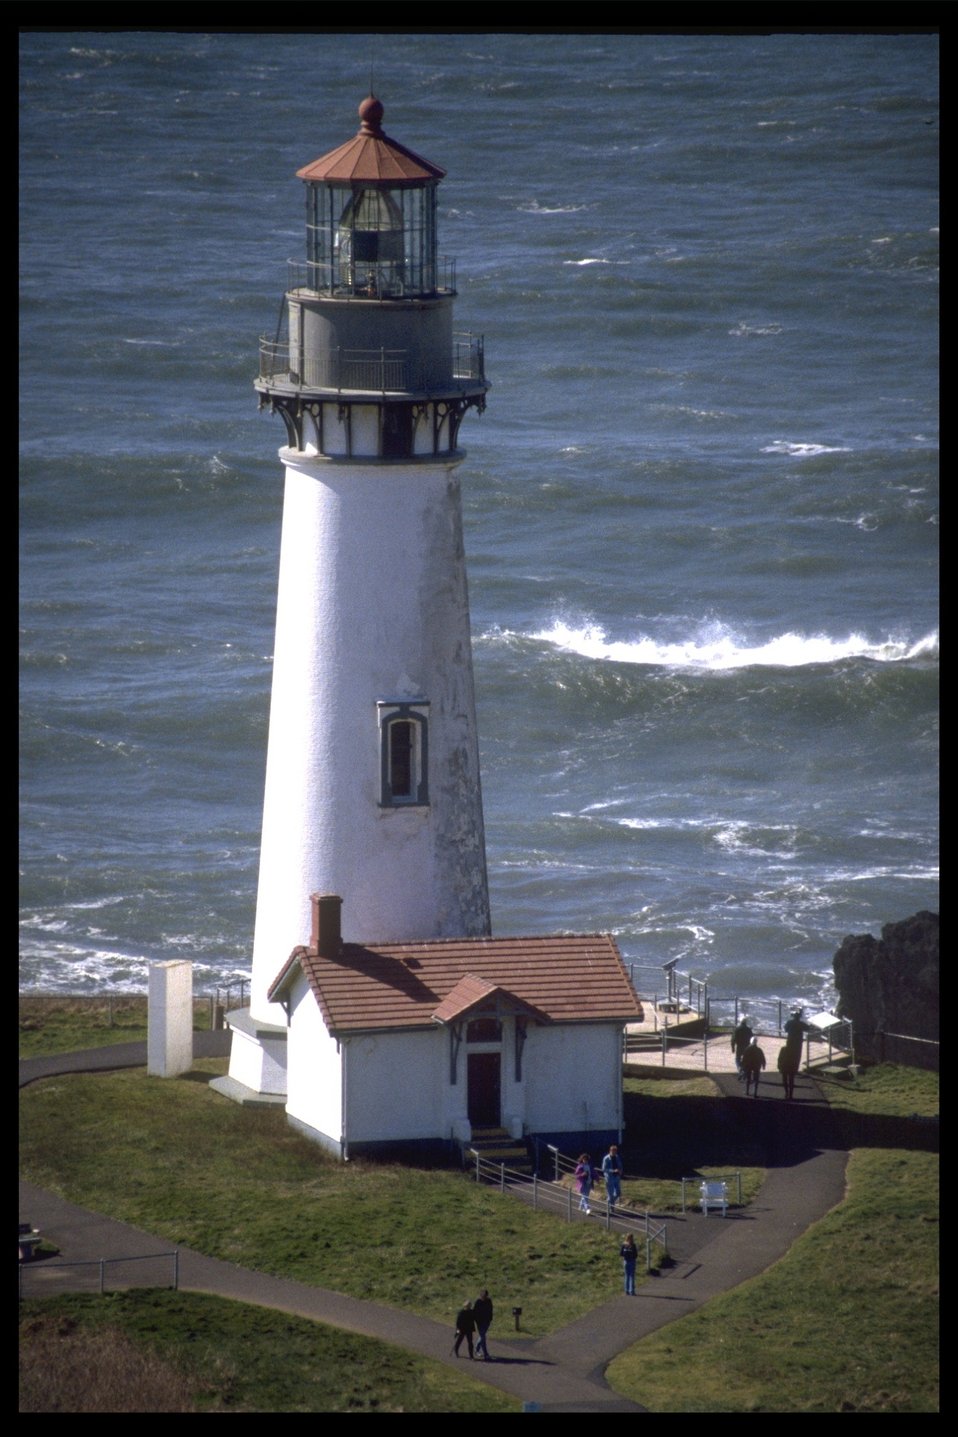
Yaquina Head Lighthouse.